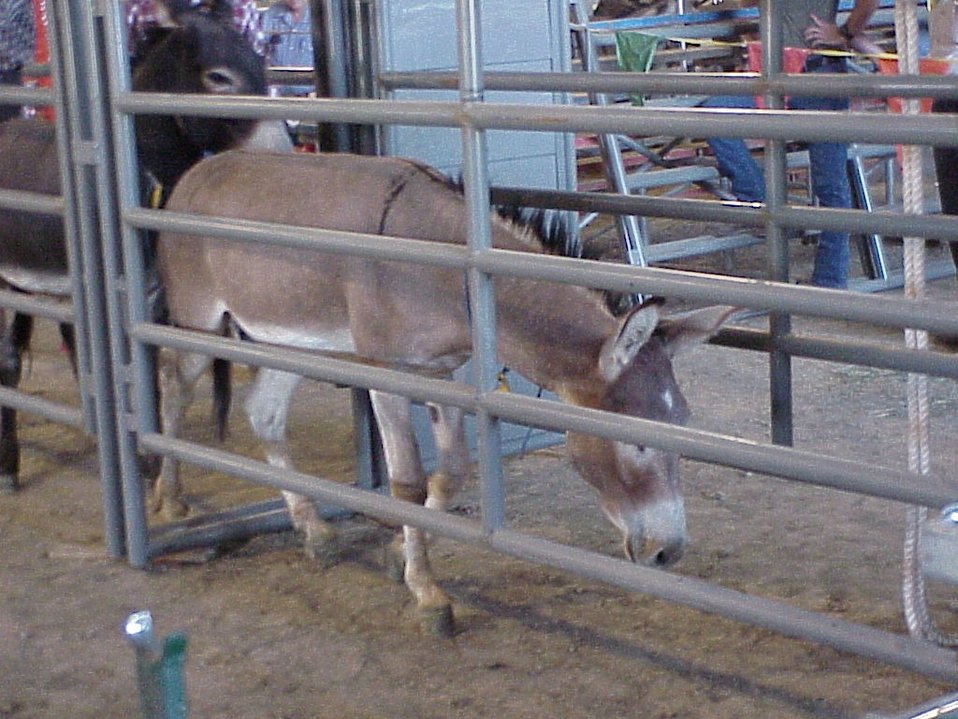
Burros Lewiston Wild Horse and Burro Adoption Program Auction WHB indoor auction Cottonwood Field Office UCSC Upper Columbia Salmon Clearwater District